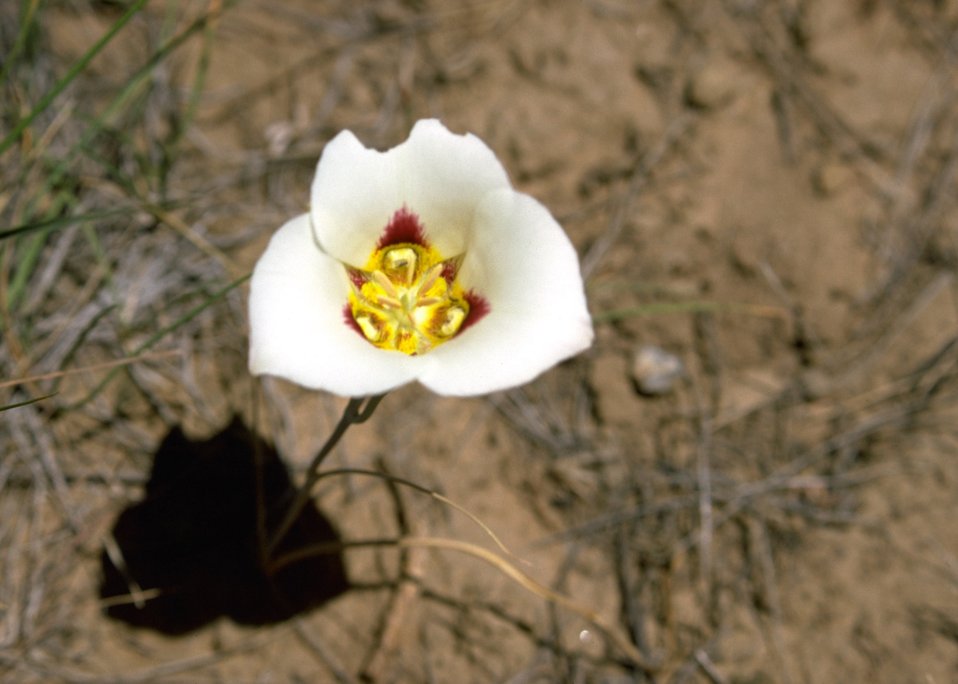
Close-up of a white sego lily.